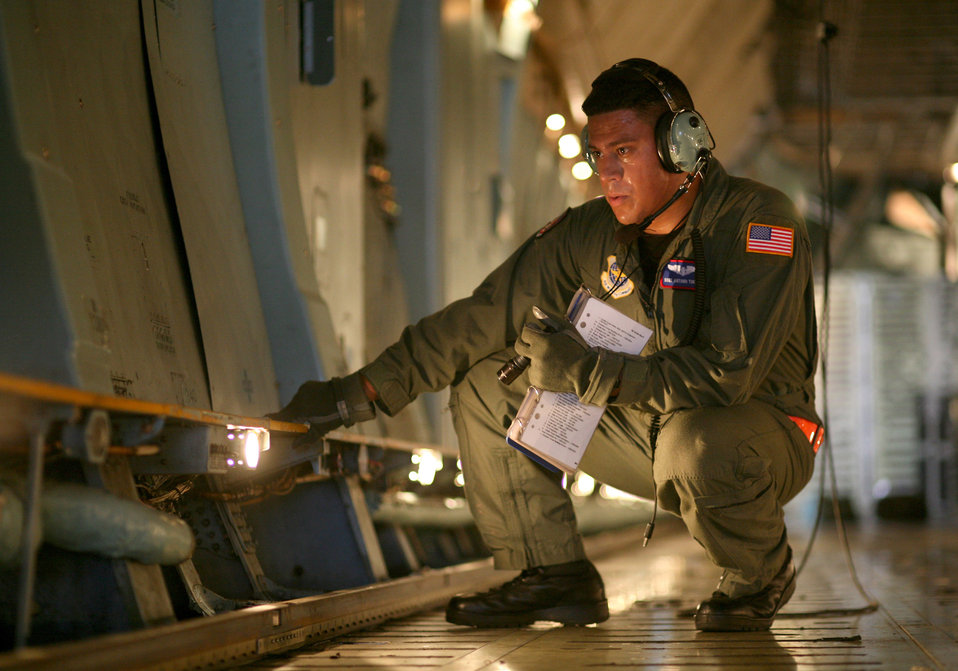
All secure

Staff Sgt. Antonio Torres performs a preflight check of a C-5 Galaxy before take-off Aug. 21 at Lackland Air Force Base, Texas. He is a flight engineer student with the Air Force Reserve's 433rd Airlift Wing at Lackland AFB.